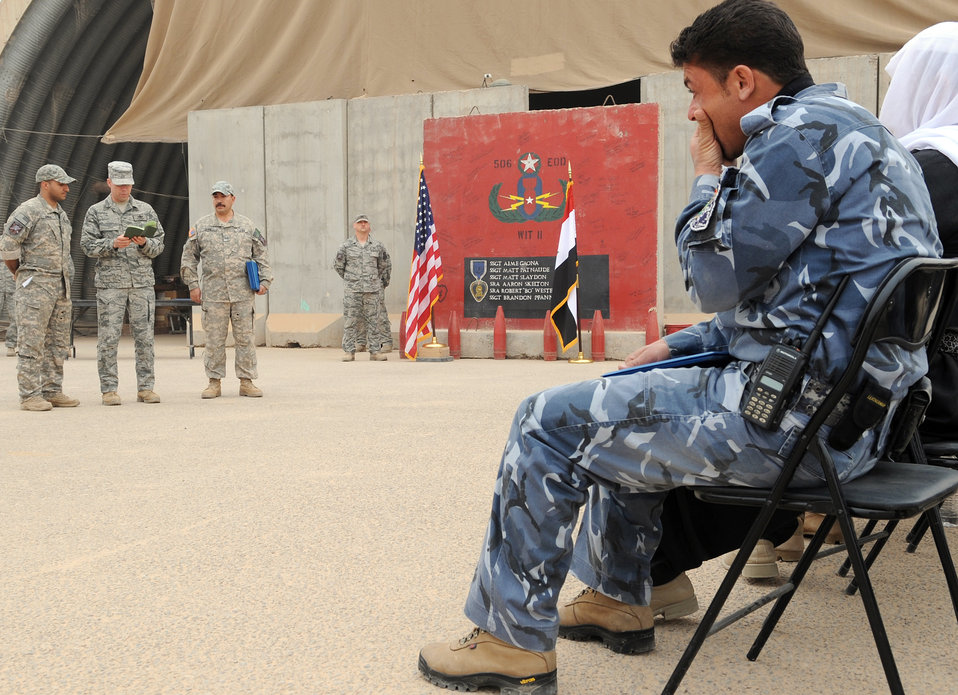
Airmen unveils memorial, raise money to honor families of fallen Iraqi comrades

Members of the 506th Civil Engineer Squadron explosive ordnance disposal team memorialize three Iraqi police counter-explosive team members killed by an Aug. 12, 2009, vehicle-borne improvised explosive device by unveiling a mural painted in their honor Feb. 23, 2010, at the EOD compound at Kirkuk Air Base, Iraq. The families of the fallen were presented donated funds raised during an EOD bomb suit run.